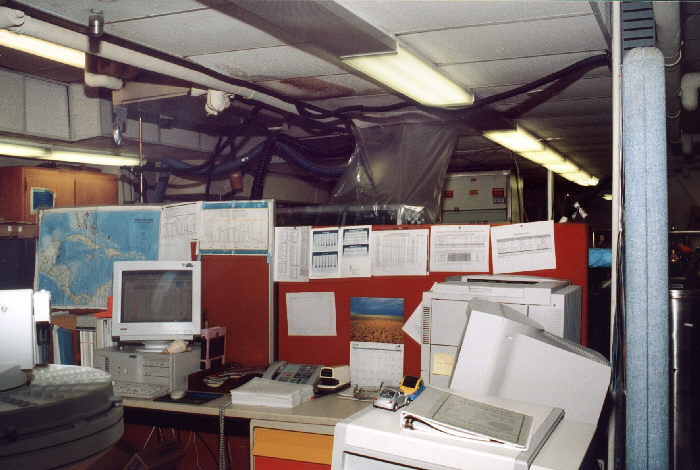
Lab Scene, Building 17, Chamblee, CDC